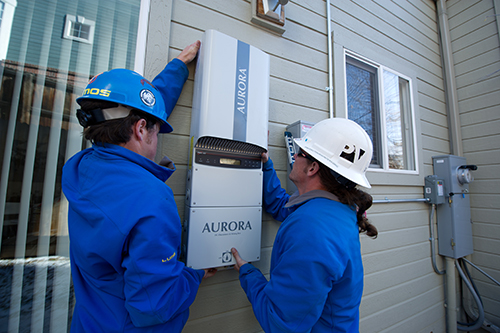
Lighthouse solar install a photovoltaic power box for the microcrystalline photovoltaic modules on top of town home in Colorado.